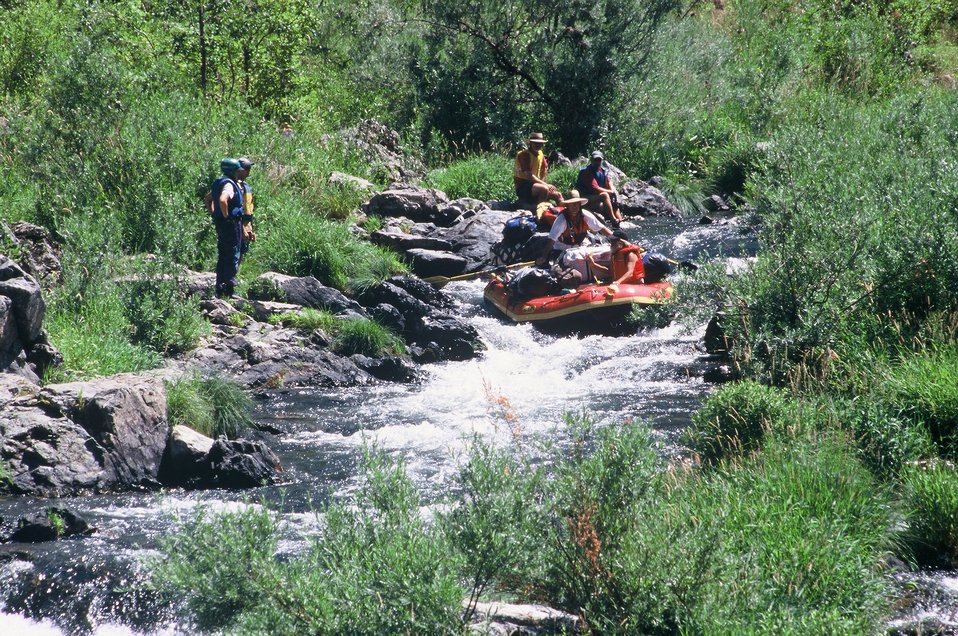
Rainie Falls Fish Ladder